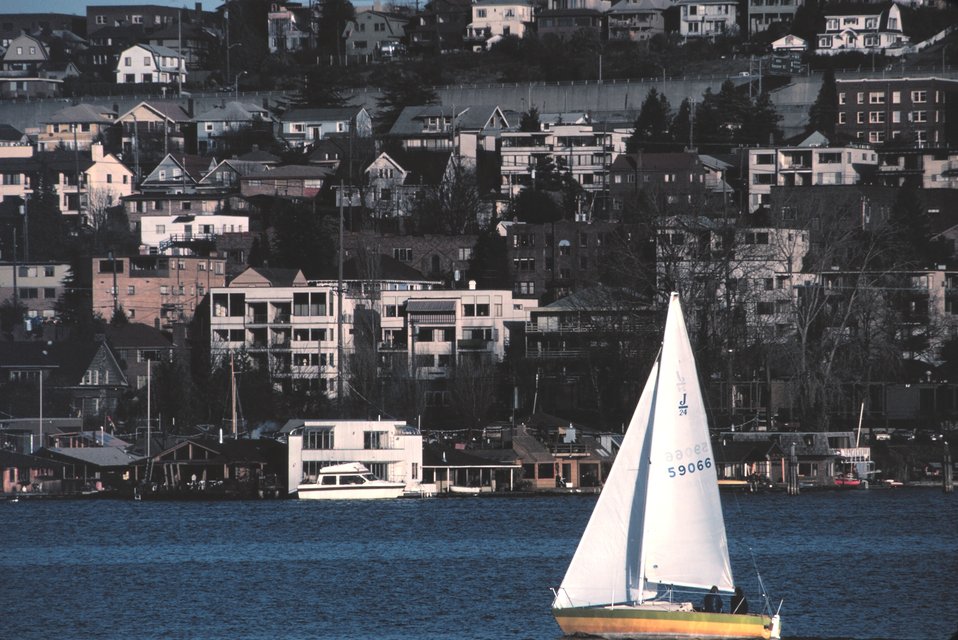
Sailing on Lake Union